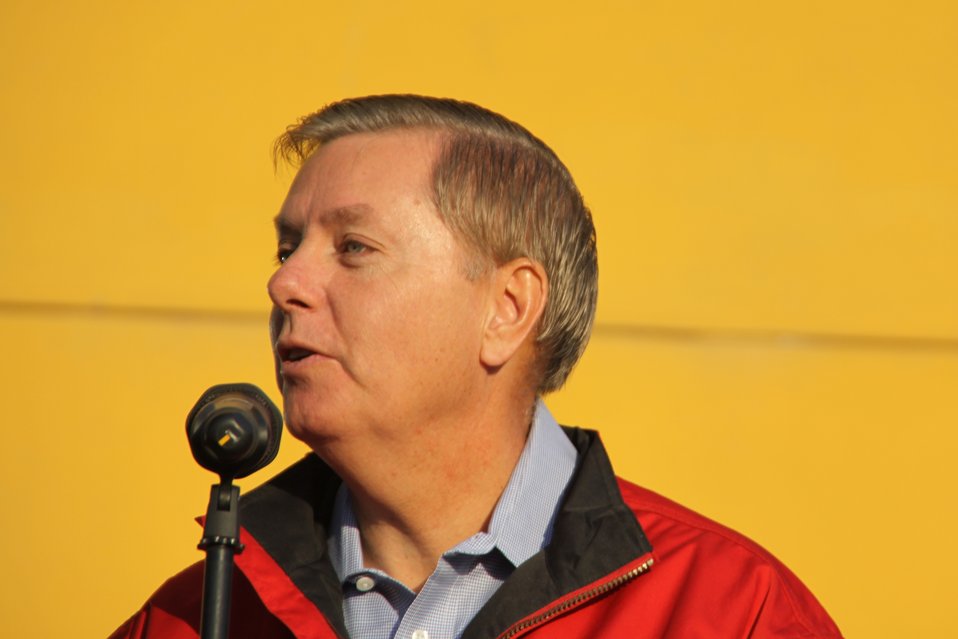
Senator Graham